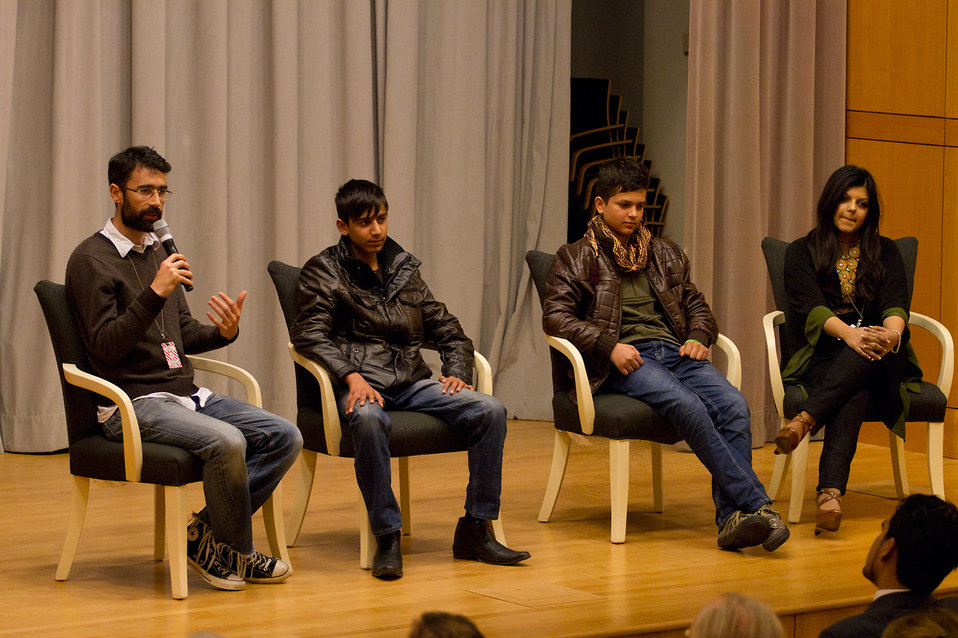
The Stars and Producer of Buzkashi Boys Visit the State Department

The stars and producer of the Oscar-nominated film Buzkashi Boys visit the U.S. Department of State in Washington, D.C., for a screening and Q and A on February 28, 2013.